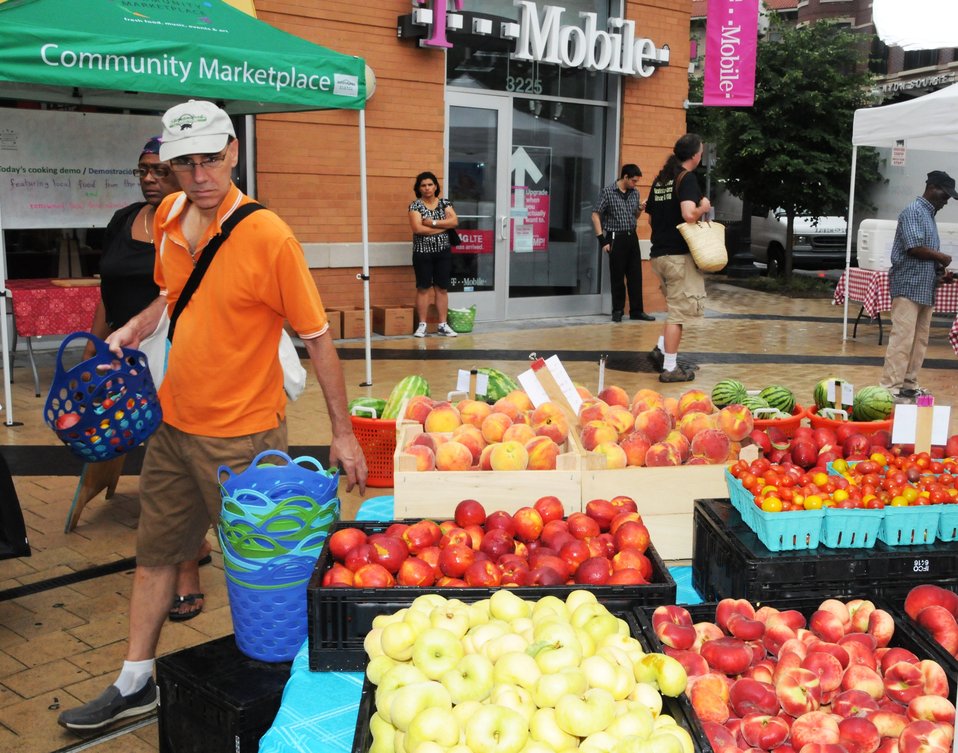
Produce Choices

Shopping for produce at the Columbia Heights Community Marketplace.